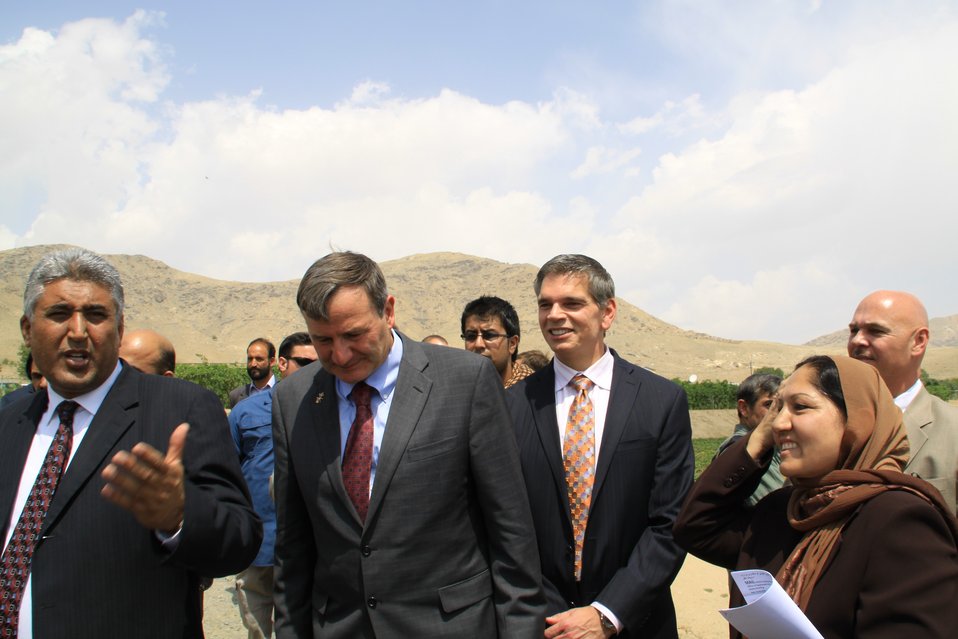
Badam Bagh Farm